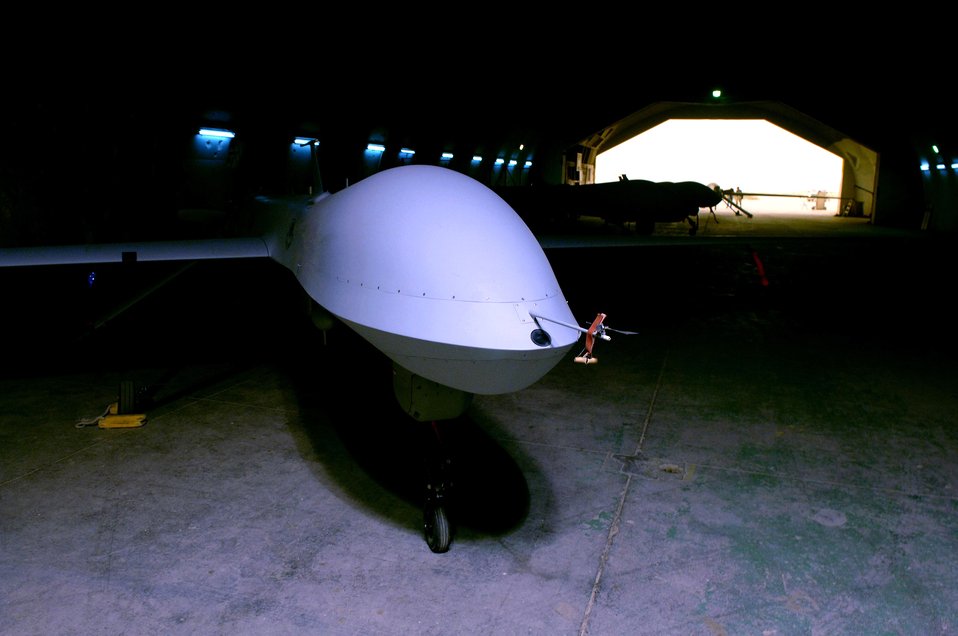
Predators wait to soar into Iraqi sky

An MQ-1 Predator unmanned aerial vehicle sits in its hangar waiting for it next mission in May at Balad Air Base, Iraq. The Predator provides armed reconnaissance, airborne surveillance and target acquisition for coalition forces. The Predator carries the Multispectral Targeting System with AGM-114 Hellfire missile targeting capability and integrates electro-optical, infrared, laser designator and laser illuminator into a single sensor package. The aircraft can employ two laser-guided Hellfire anti-tank missiles with the MTS ball.